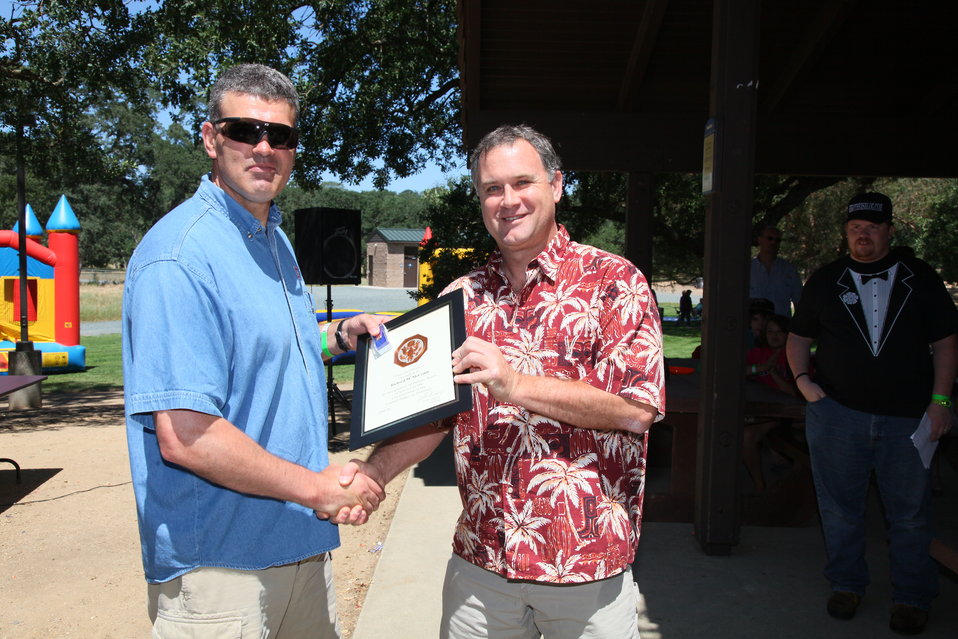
2011 Annual Picnic